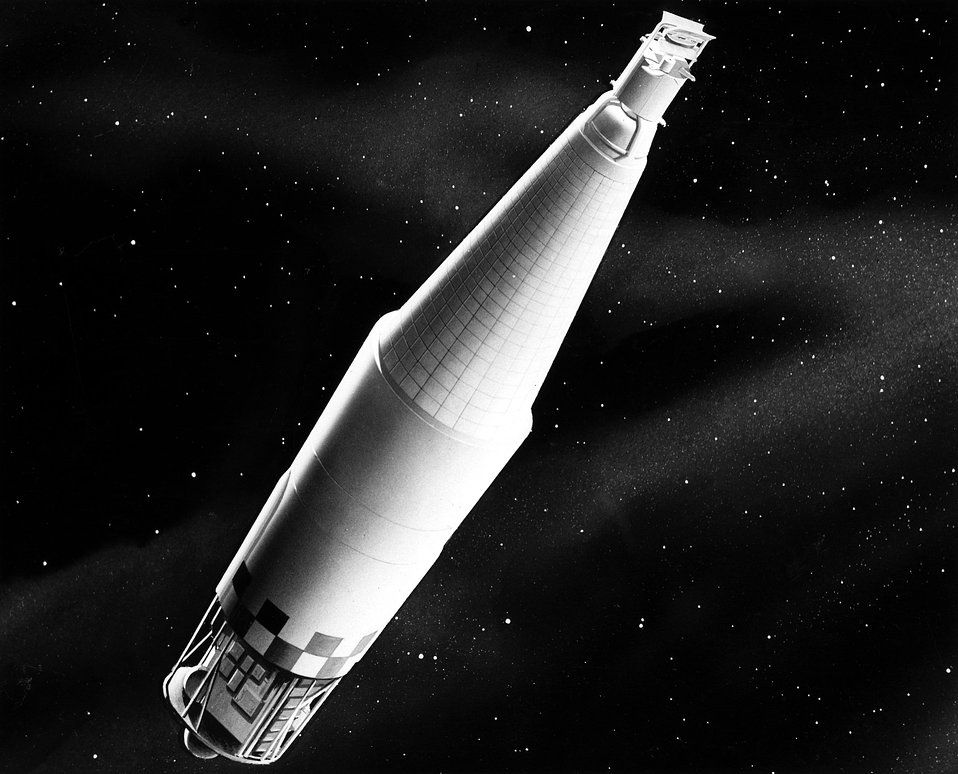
Artist's concept of SNAP 10A system in space.